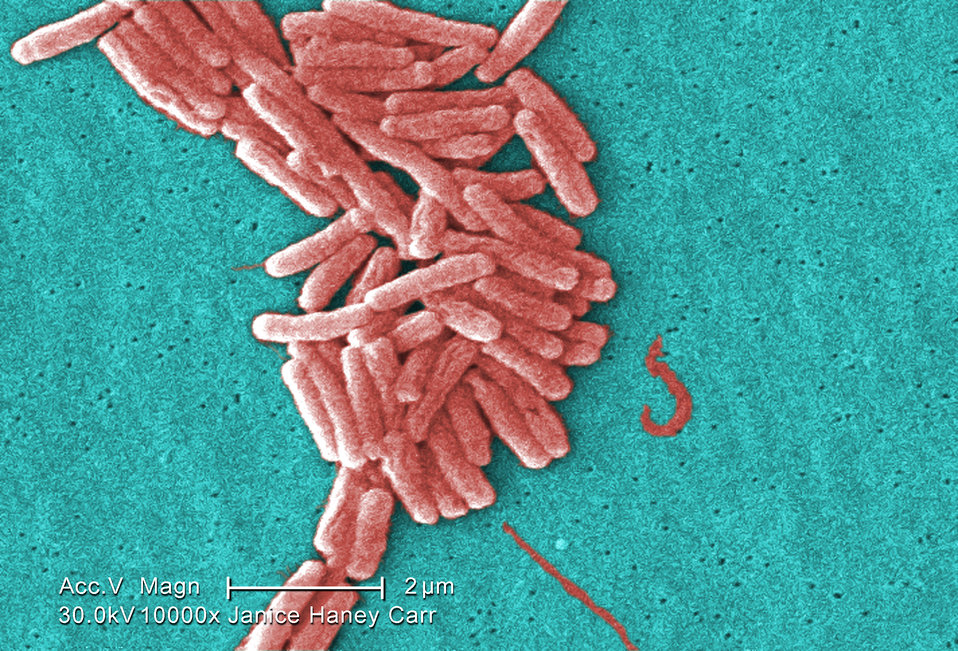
Under a moderately-high magnification of 10000X, this scanning electron micrograph (SEM) depicted a number of Gram-negative Legionella pneumophila bacteria. Please see PHIL 11092 through 11152 for additional SEMs of these organisms, specifically PHIL 11136 for a colorized version of this image. Of particular importance, is the presence of polar flagella, and pili, or long streamers, which due to their fragile nature, in some of these views seem to be dissociated from any of the bacteria. For a better view of these cellular appendages, see the colorized version.